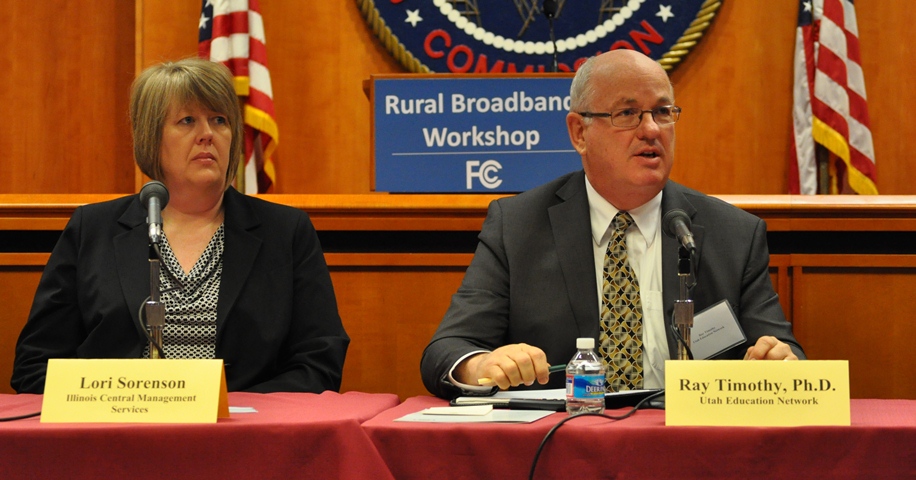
Rural Broadband Workshop: March 19, 2014

Panel 3: State Strategies to Meet the Rural Broadband Challenge